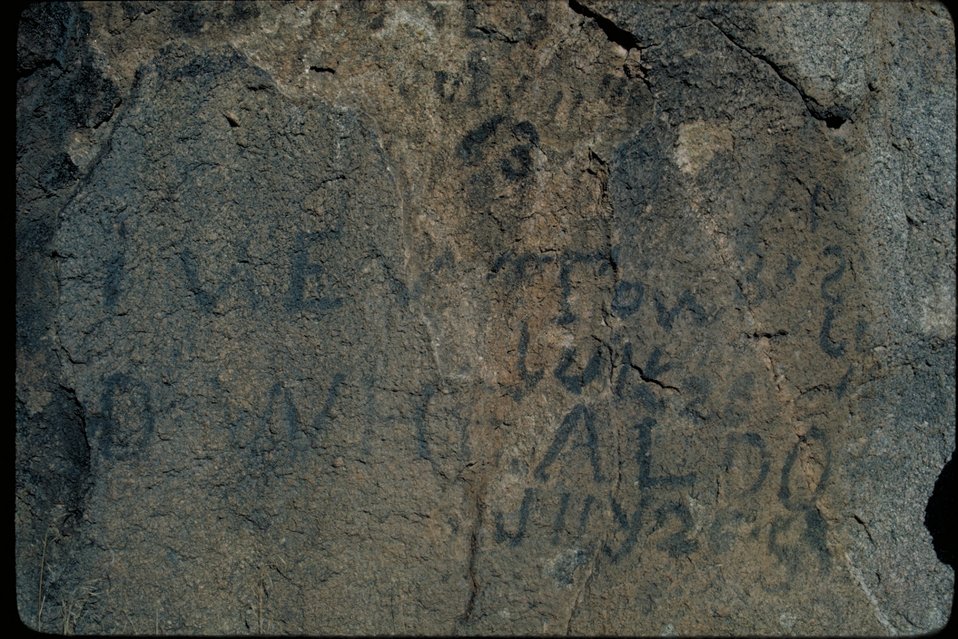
Oregon Trail inscriptions near Ditto Creek Lower Snake River District